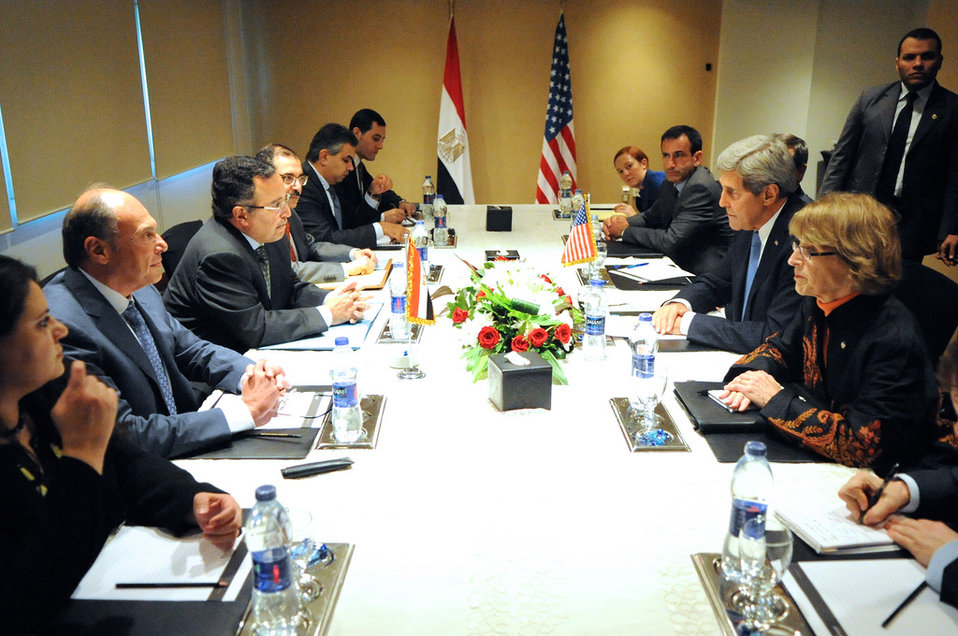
Secretary Kerry And U.S. Delegation Meet With Egyptian Foreign Minister Fahmy

U.S. Secretary of State John Kerry, accompanied by a government delegation, meets with Egyptian Foreign Minister Nabil Fahmy and respective counterparts at the outset of a meeting in Cairo, Egypt, on November 3, 2013.